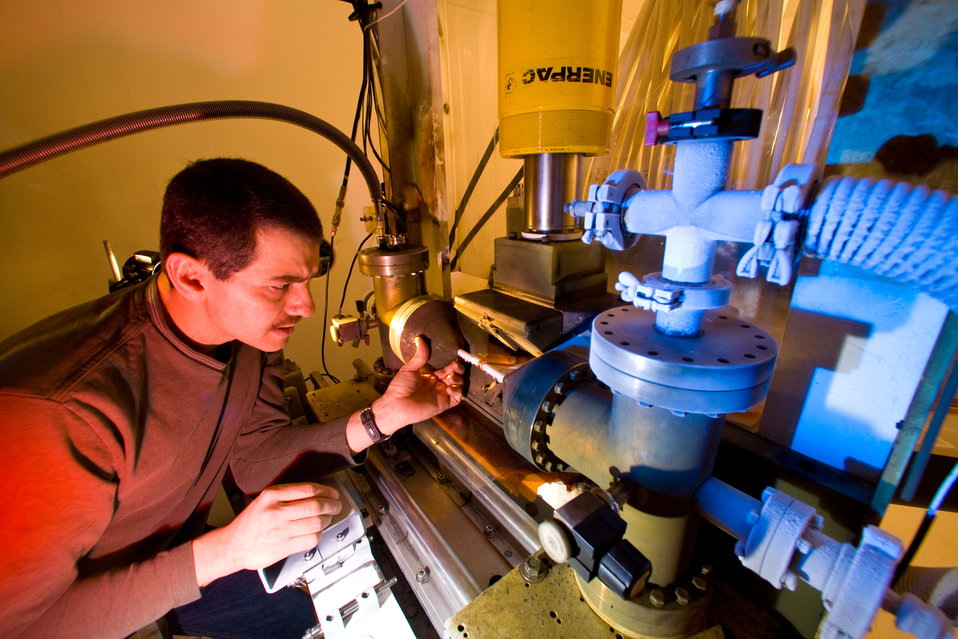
LOS ALAMOS RESEARCHER WITH THE SINGLE-TURN ELECTROMAGNET

The white tube passing through the magnet's single copper loop contains the sample and the measurement probes. A 3-million-ampere current pulse creates a 240-tesla magnetic field at the loop's center, generating so much heat and magnetic force that the loop explodes. The tube and its contents survive intact.